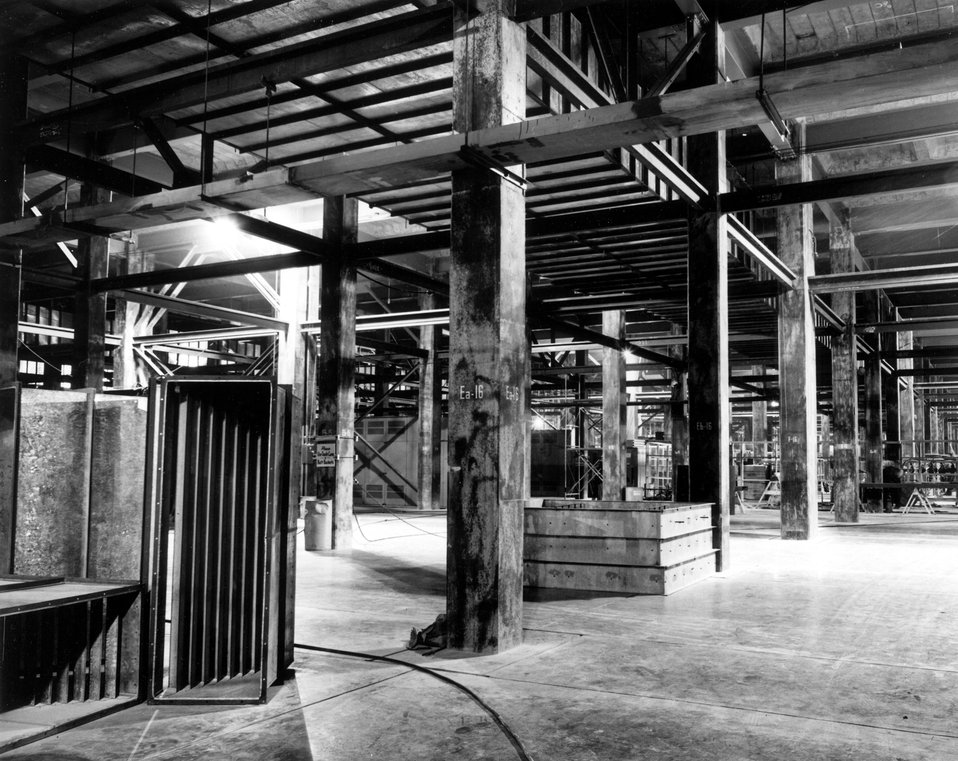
Area Bld. C-333 Ground floor from column E-16.